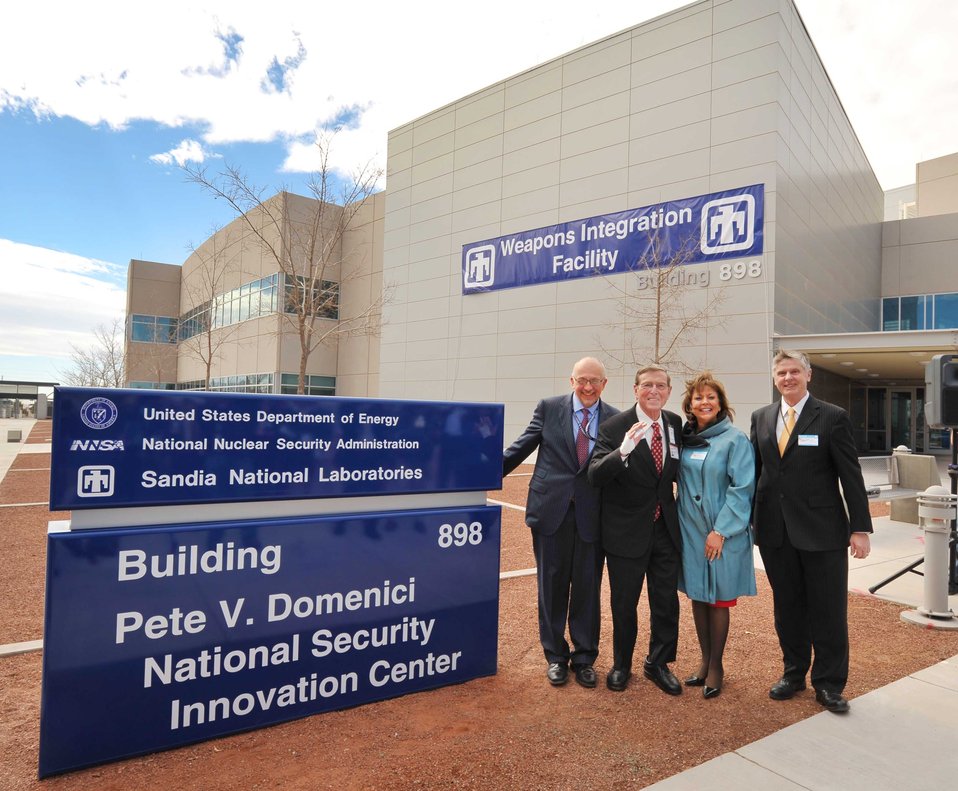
Sandia Labs Director Paul Hommert stands with retired U.S. Senator Pete Domenici, New Mexico Governor Susana Martinez and Don Cook, deputy administrator for Defense Programs at the National Nuclear Security Administration outside the former Weapon Integration Facility building, which was rededicated as the Pete V. Domenici National Security Innovation Center.